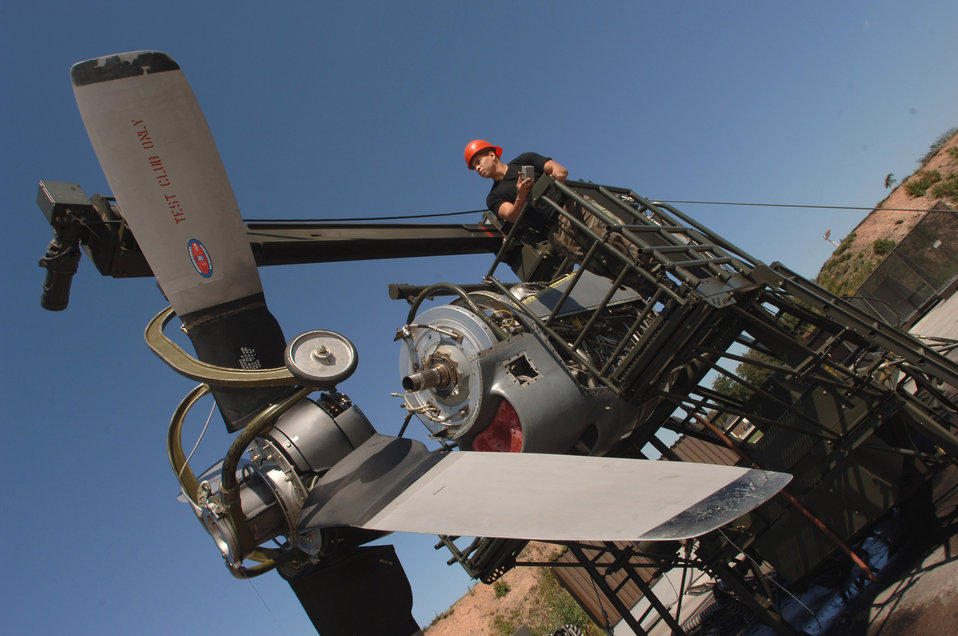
Propeller

Senior Airman Aaron Arechiga raises a propeller with an adapter crane at Ramstein Air Base, Germany, to attach it to a C-130 Hercules engine. Airman Arechiga is on temporary duty from Pope Air Force Base, N.C.